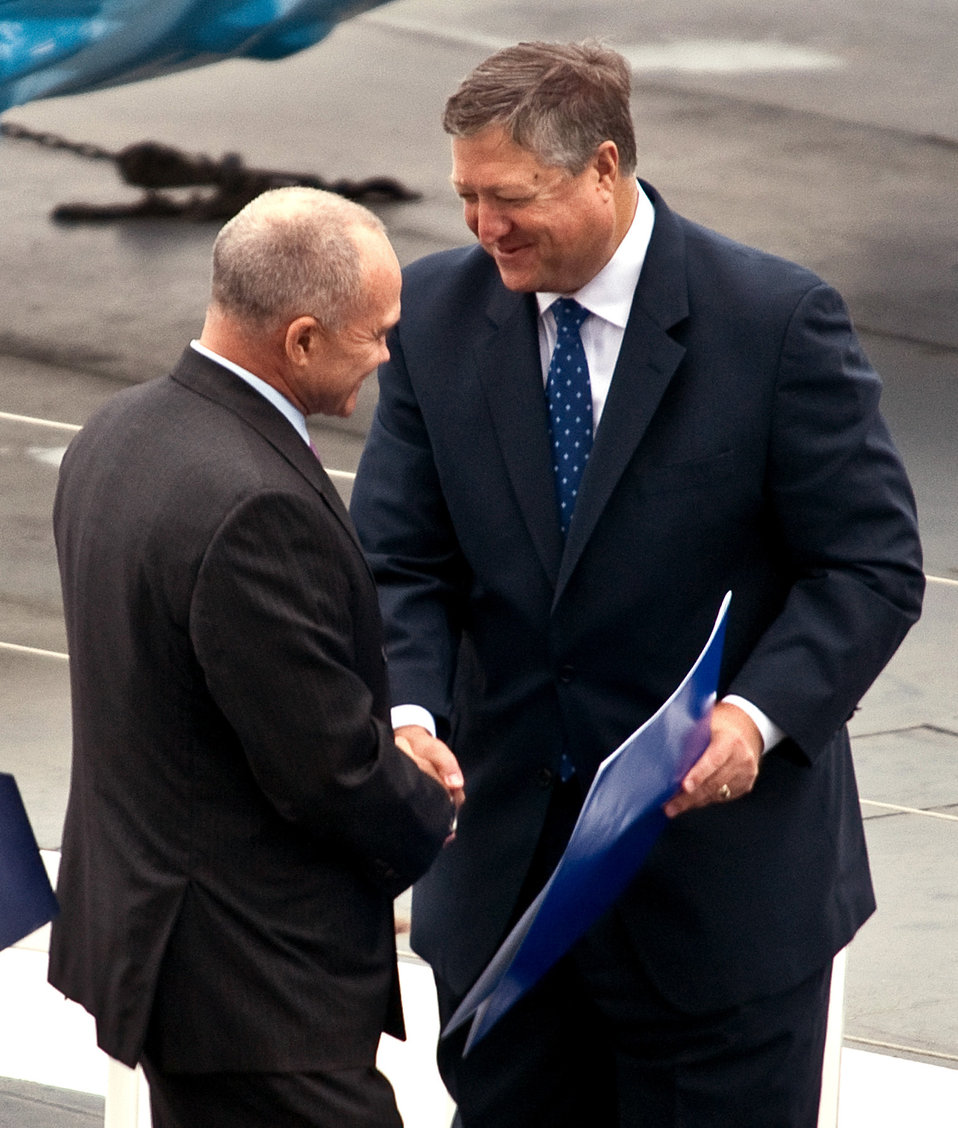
SecAF speaks at AF Week New York City

New York City Police Commissioner Raymond Kelly (left) presents the proclamation document to Secretary of the Air Force Michael Donley during the Air Force Week-New York City proclamation ceremony at the USS Intrepid Sea, Air and Space Museum Aug. 24, 2010. Also attending was Gen. Raymond Johns, commander of Air Mobility Command, and Greg Kelly of